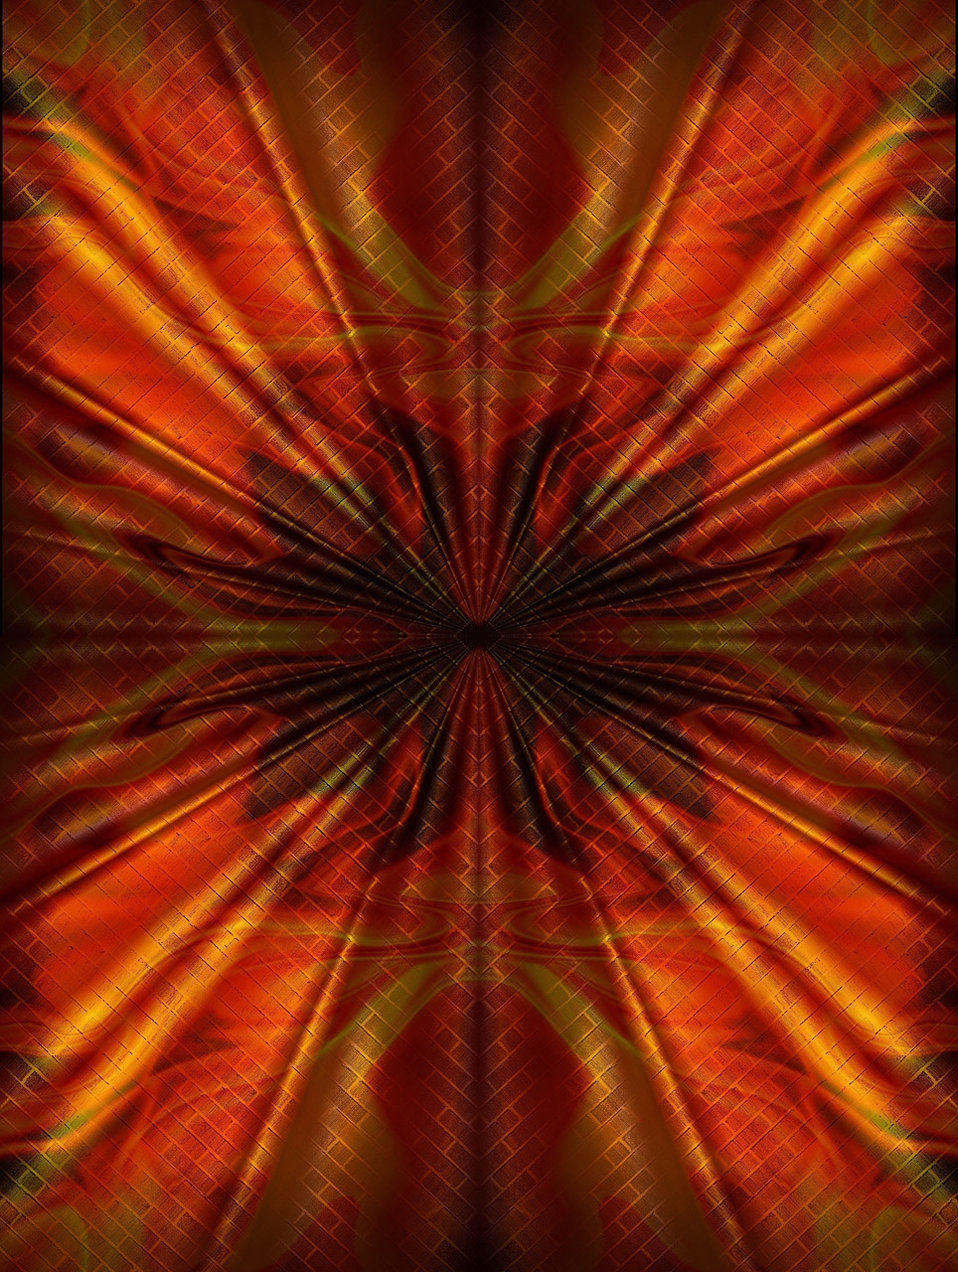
Background.